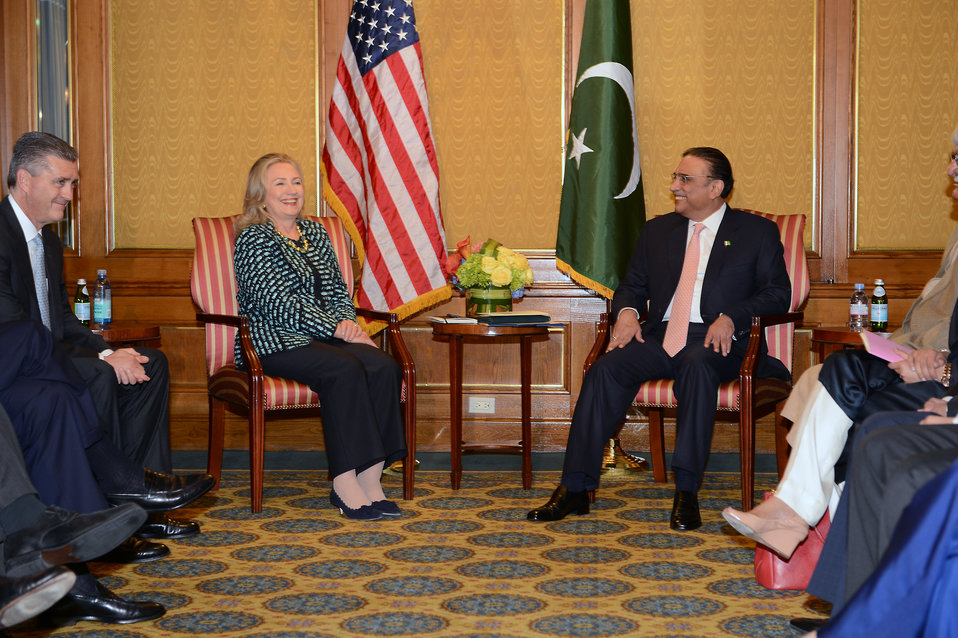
Secretary Clinton Meets With Pakistani President Zardari

U.S. Secretary of State Hillary Rodham Clinton meets with Pakistani President Asif Ali Zardari in New York, New York on September 24, 2012.